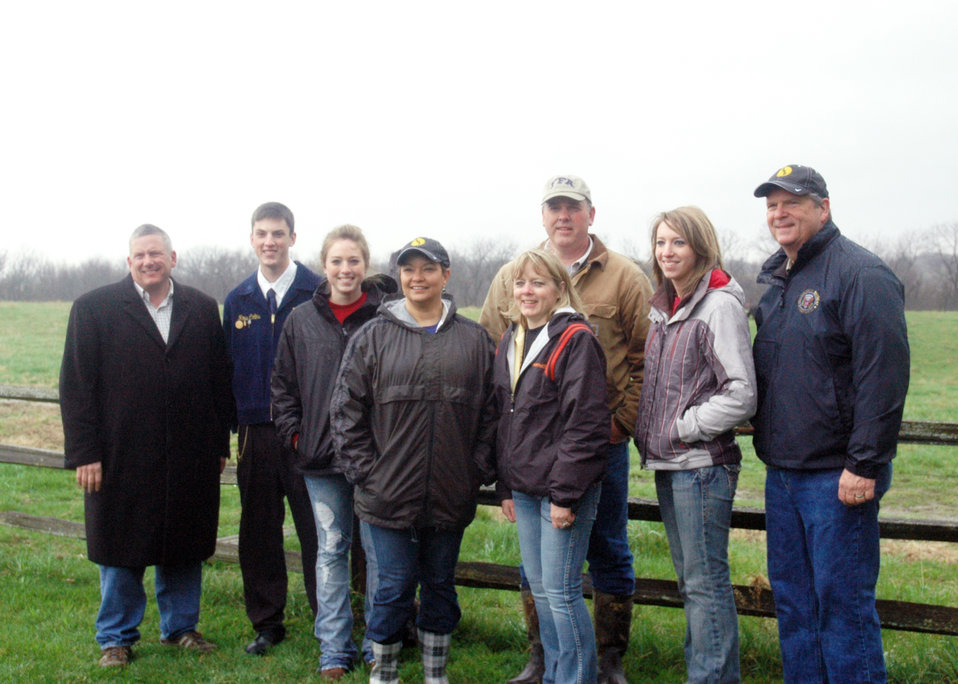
Left to right Iowa Secretary of Agriculture Bill Northey, Ross Collins, Trish Collins, Enviornmental Protection Agency Administrator Lisa P. Jackson, Renee Collins in front Monty Collins, Keisha Collins and Agriculture Secretary Tom Vilsack. The group was in front of the pasture used for rotational grazing on the Collins Farm, in Marshalltown, IA on Tuesday, April 19, 2011.